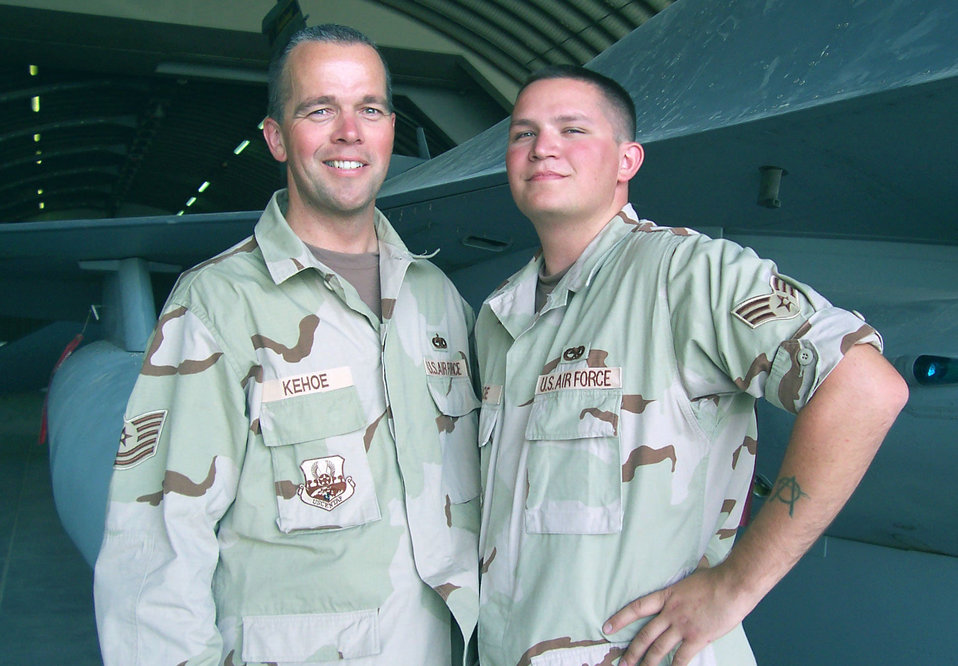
Family affair

SOUTHWEST ASIA -- Tech. Sgt. James Kehoe (left) and his son, Senior Airman Travis Kehoe, are deployed together here supporting operations Enduring Freedom and Operation Iraqi Freedom. They are Airmen with the Vermont Air National Guard's 158th Fighter Wing. The memory of Marine Cpl. Mark Evnin, a family friend who was killed in action last year, is what puts the fire in their fight.